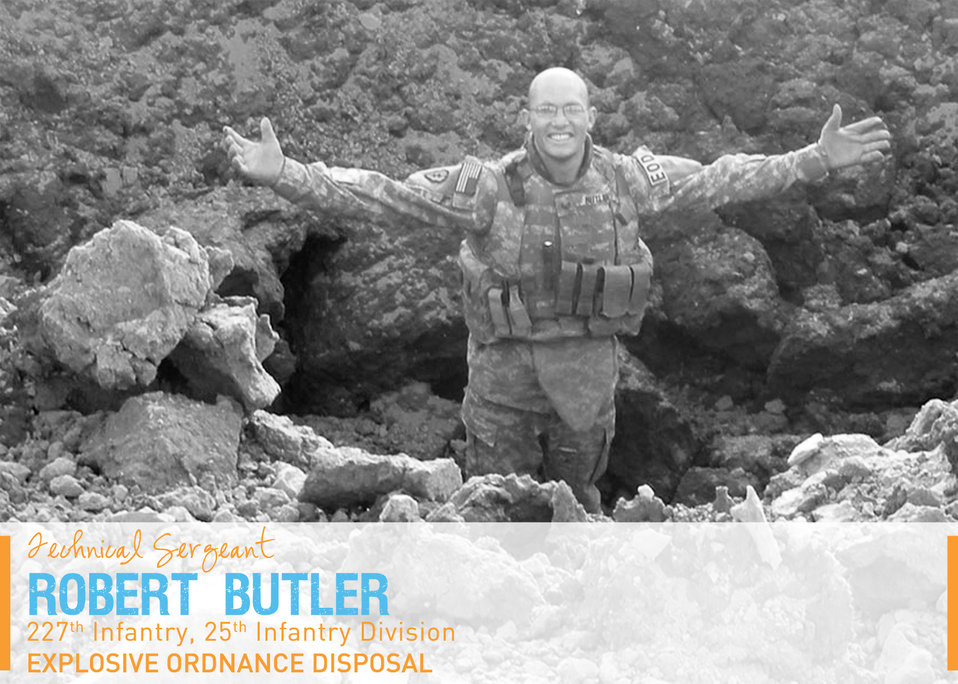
Portraits in Courage Vol 4: Tech. Sgt. Robert Butler, explosive ordnance disposal, 227th Infantry, 25th Infantry Division, and assigned to Vandenberg Air Force Base, Calif. He was first on the scene looking for secondary devices after an improvised explosive device exploded wounding five Iraqi policemen.